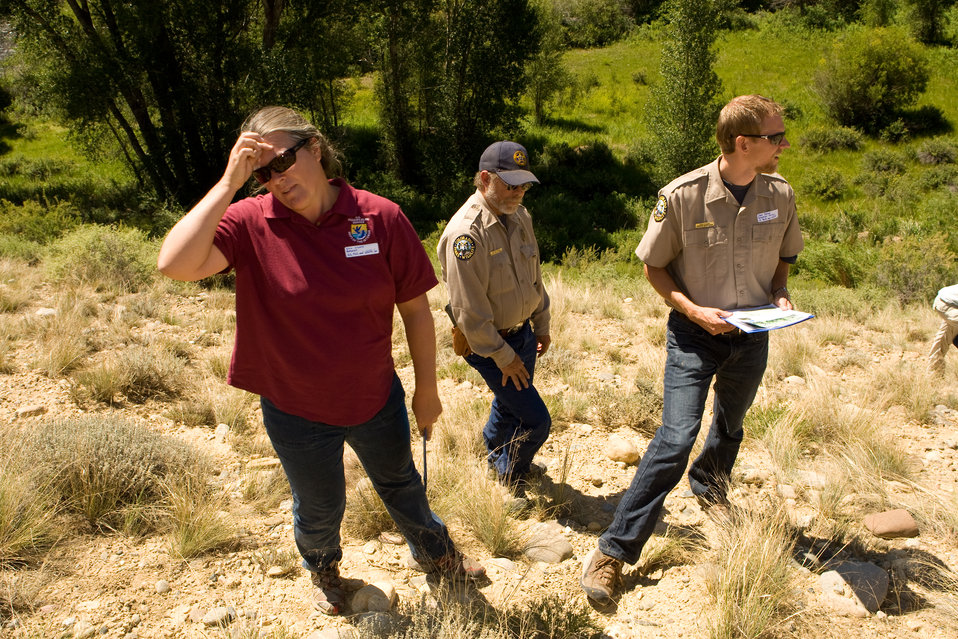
Colorado Rare Plant Conservation Initiative

The Colorado Rare Plant Conservation Initiative (RPCI) is a partnership of 23 statewide and regional agencies, private organizations, and academic institutions working to conserve 121 rare plants in Colorado. As part of these efforts the group developed the Colorado Rare Plant Conservation Strategy, developed Best Management Practices to reduce energy development impacts, addressed climate change, and developed focused strategies for the conservation of individual species at eight priority landscapes. The group has also worked to coordinate volunteer efforts for plant conservation across the state.